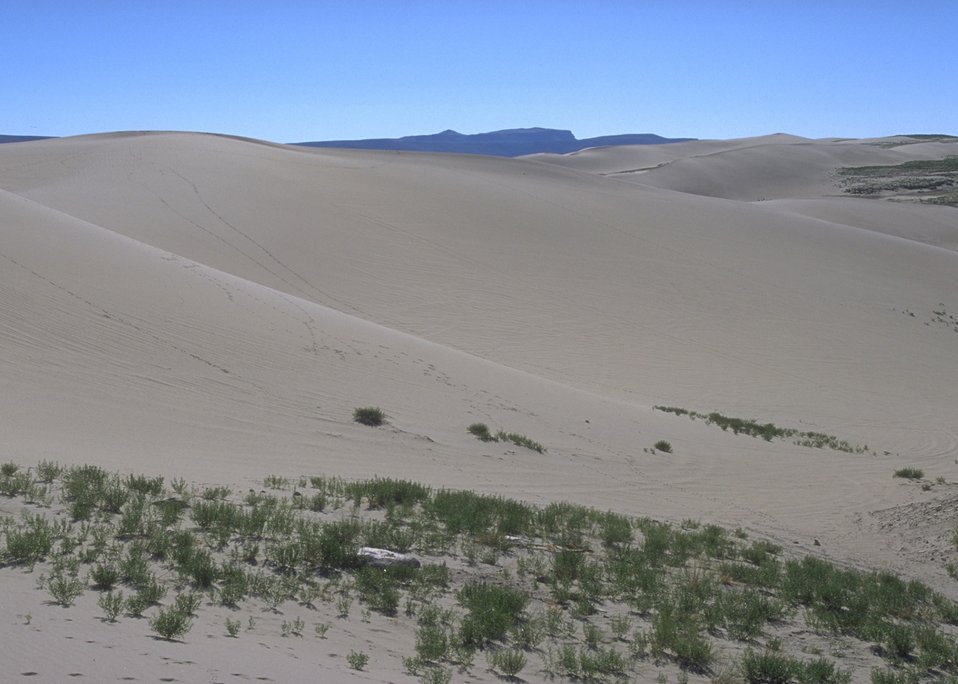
OHV Sand Dunes Area, Rock Springs Field Office.